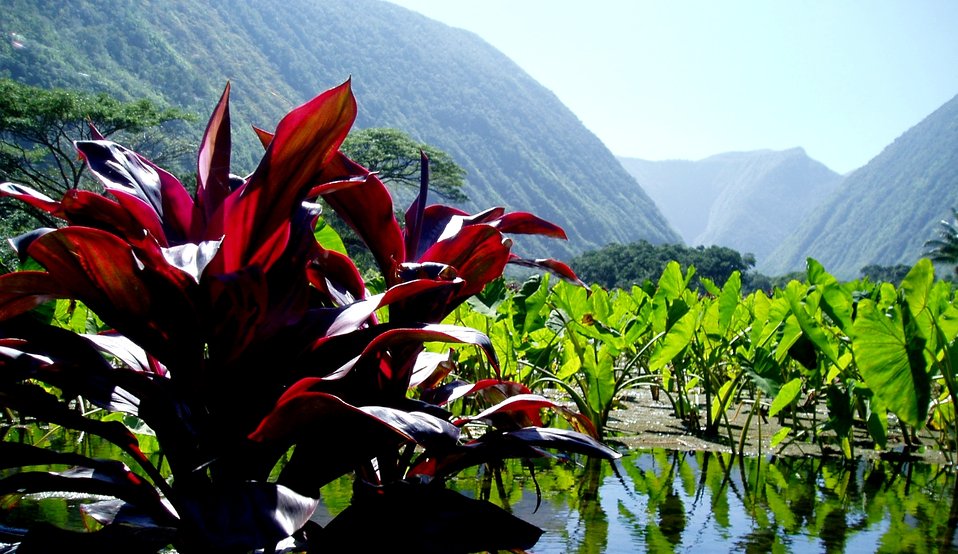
Looking south down the Waipio Valley